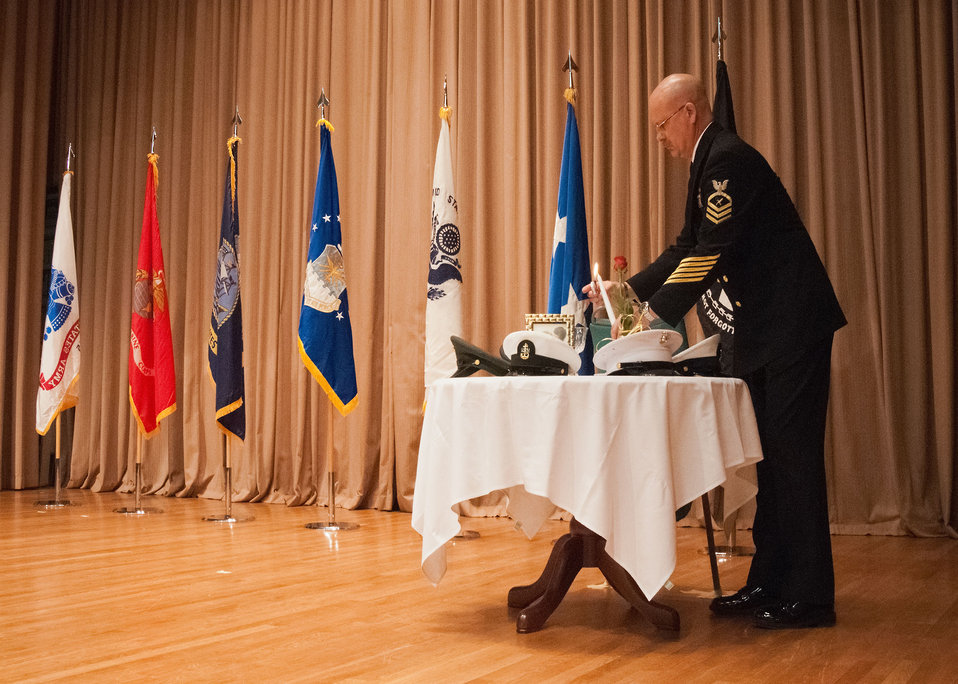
Classified National Security Programs, Office of Homeland Security and Emergency Coordination (OHSEC) U.S. Department of Agriculture U.S. Navy Chief Keith T. McElfresh lights the candle during the POW/MIA Table at the U.S. Department of Agriculture Veterans Day Observance: Honoring All Who Served Wednesday, Nov. 7, 2012 in Washington, D.C. The POW/MIA Ceremony is an opportunity to remember those gallant individuals who fought and died for our country and paid an incredible price to help preserve the freedoms we enjoy today.